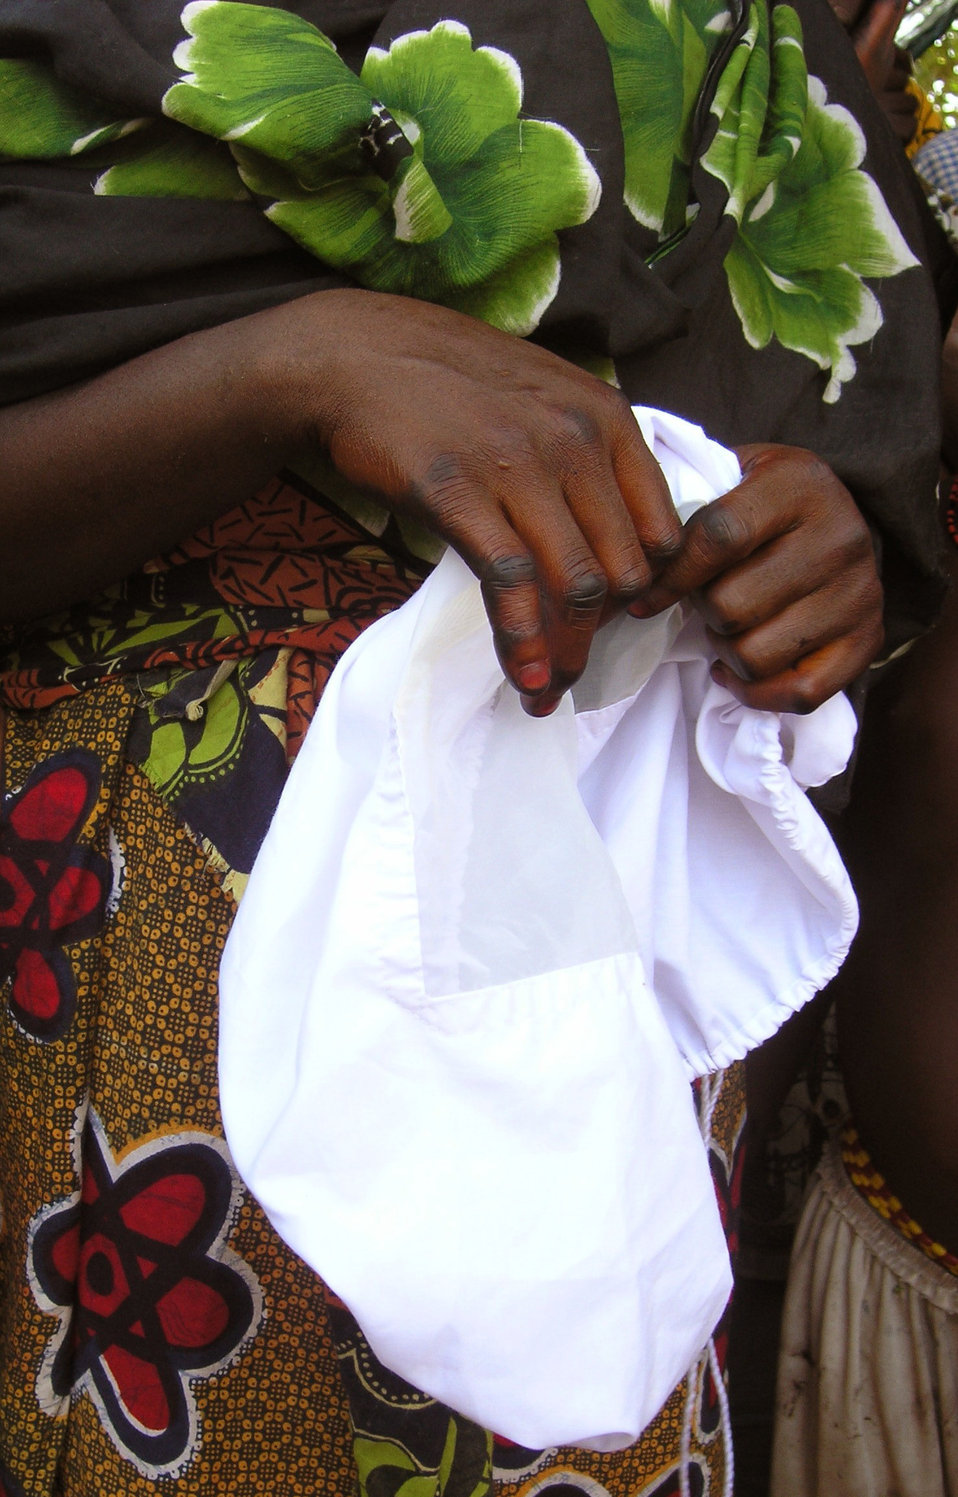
This 2004 image shows a Ghanaian villager holding a filter cloth provided by The Carter Center as part of its Guinea Worm, Dracunculus medinensis, Eradication Program. Guinea worm disease (GWD) is contracted when stagnant water, contaminated with microscopic copepods, or 'water fleas' carrying infective larvae, is consumed. If a person filters the drinking water through a household filter, as the one pictured here, they will remove the water fleas that carry the infective Guinea worm larvae.